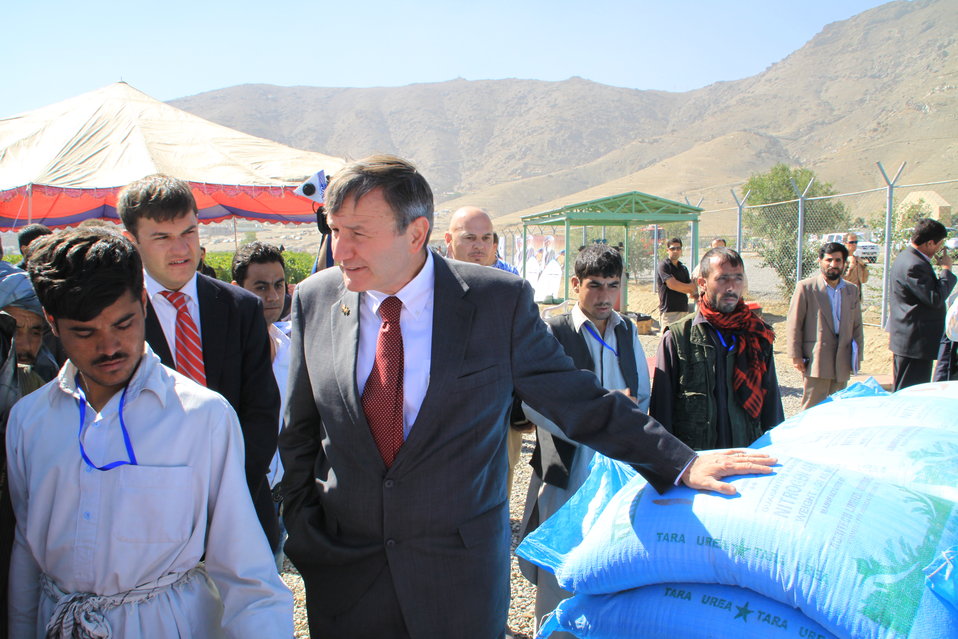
AVIPA Plus Wheat Seed Distribution 101005

US Ambassador Karl Eikenberry and USAID Acting Mission Director Kevin Brownawell joined the Minister of Agriculture, Irrigation and Livestock, H.E. Minister Mohammed Rahimi in signing a Memorandum of Understanding and distributing vouchers to area farmers for wheat and fertilizer.

US Ambassador Karl Eikenberry and USAID Acting Mission Director Kevin Brownawell joined the Minister of Agriculture, Irrigation and Livestock, H.E. Minister Mohammed Rahimi in signing a Memorandum of Understanding and distributing vouchers to area farmers for wheat and fertilizer.